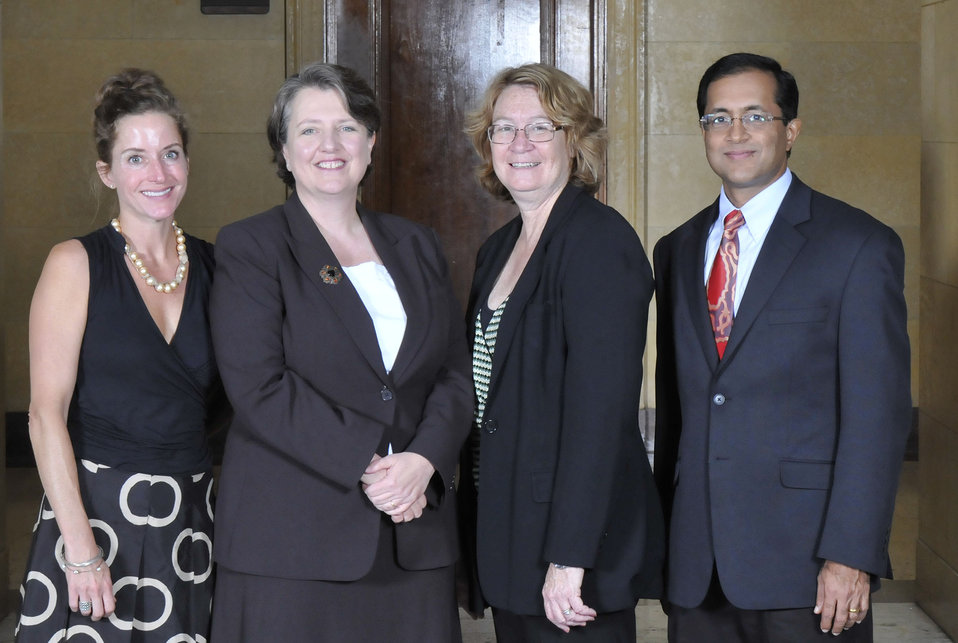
Using Behavioral Economics to Improve Children’s School Food Choice, Economic Research Service, Washington, DC. Joanne Guthrie and Lisa Mancino, Group Leaders. For pioneering the use of methods derived from behavioral economics to develop a suit of products that help school food administrators and police makers build healthier school food environments across the country. On September 14, 2011 in the patio of the Whitten Building Patio of the US Department of Agriculture in Washington, DC.